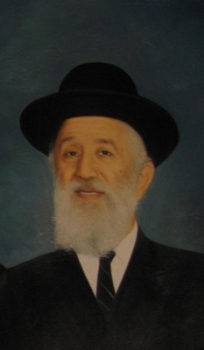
Rabbi Moses Joseg Rubin